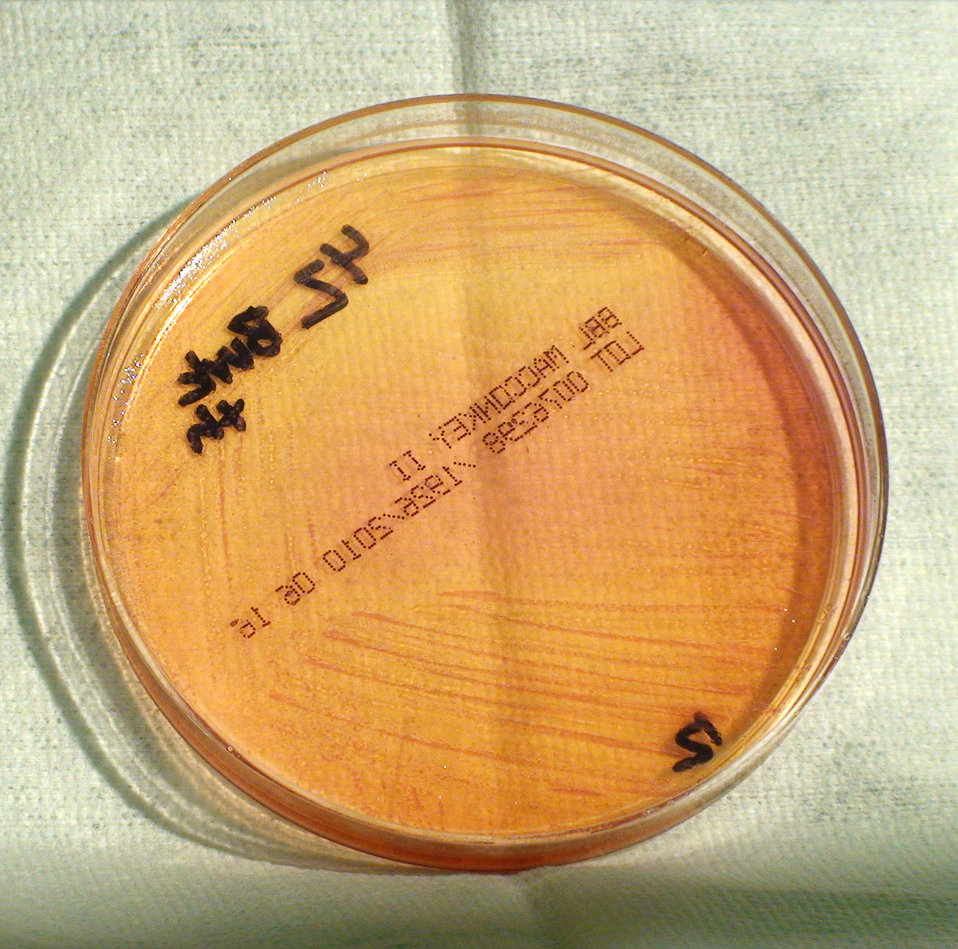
This photograph depicts the colonial morphology displayed by Gram-negative Burkholderia thailandensis bacteria, which was grown on a medium of MacConkey agar, for a 24 hour time period, at a temperature of 42�C. See PHIL 12428, for a closer view of these bacterial colonies. Also, see both PHIL 12405 and 12406, for views of this bacterial specie, grown on the same medium, but at a lesser temperature (37�C), and at twice the amount of time (48hr). Note that PHIL 12410 and 12411 depict the same bacterial specie grown on the same media, and temperature (42�C), but a greater time period (48hr). Finally, take a look at PHIL 12419 and 12420 depicting colonial growth, on the same medium, and for the same amount of time (24hr), but at a lesser temperature (37�C).